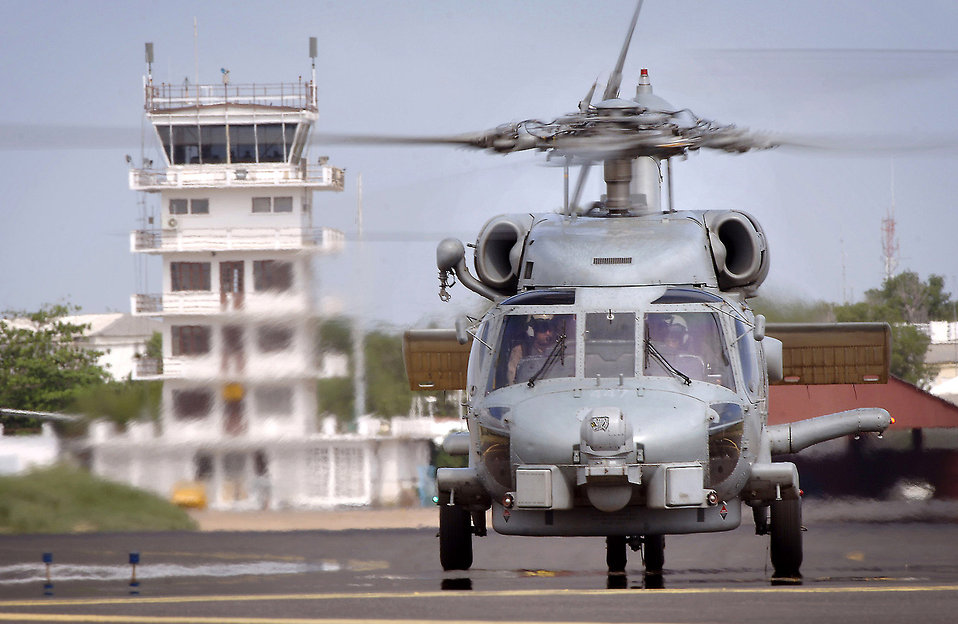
Airmen advise Djiboutian air traffic controllers

Within view of the Djibouti Ambouli tower, a Navy HS-60 Sea Hawk taxies onto the Camp Lemonier tarmac after returning from an aircraft carrier anchored nearby in the Gulf of Aden. The Navy pilots are some of the many aircrew who rely on local and U.S. military air traffic controllers.